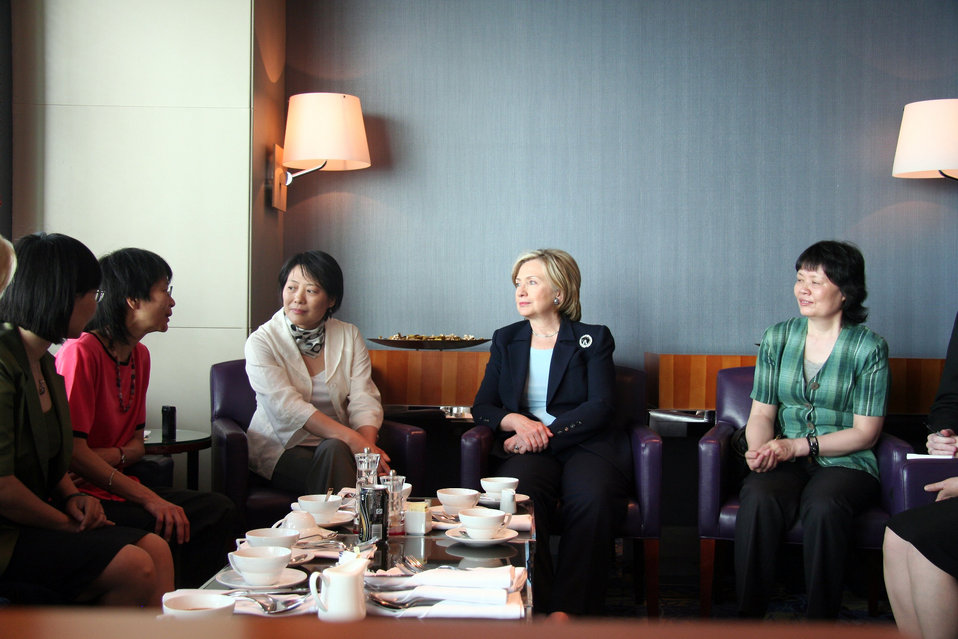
Secretary Clinton Meets With Chinese Women Civil Society Leaders

U.S. Secretary of State Hillary Rodham Clinton meets with Chinese Women Civil Society Leaders in Beijing, China, May 26, 2010. From left to right: Li Ying, Qian Qian law firm; Phyllis Chang, U.S. lawyer working in China; Guo Jianmei, Qian Qian law firm; Secretary Clinton; Li Xiaoxing, All China Women's Federation.